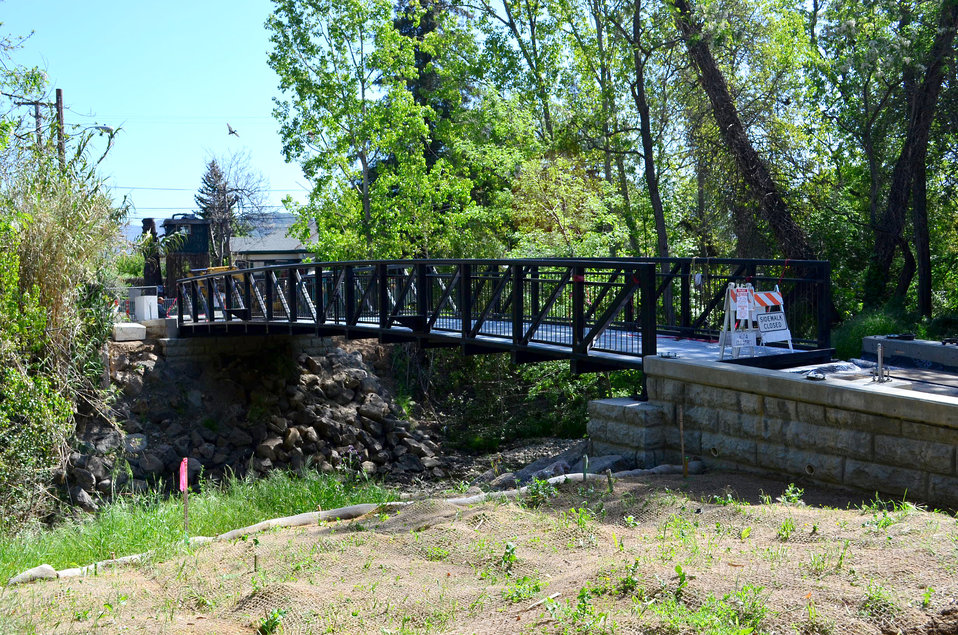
New pedestrian bridge last major phase of Corps’ Napa Creek project

A new 70-foot-long pedestrian bridge over Napa Creek in Napa, Calif., installed by the U.S. Army Corps of Engineers April 9 awaits its final touches before being opened to the public. The bridge replaced an old vehicle bridge that was too low and often blocked debris when the creek rose, causing flooding into neighboring homes and businesses. Installing the bridge was the last major phase of a $14.8 million flood risk reduction and habitat restoration project funded by the American Recovery and Reinvestment Act of 2009. The project is a joint effort by the Corps, the city of Napa and the Napa Flood Control and Water Conservation District, and is scheduled to finish in May.